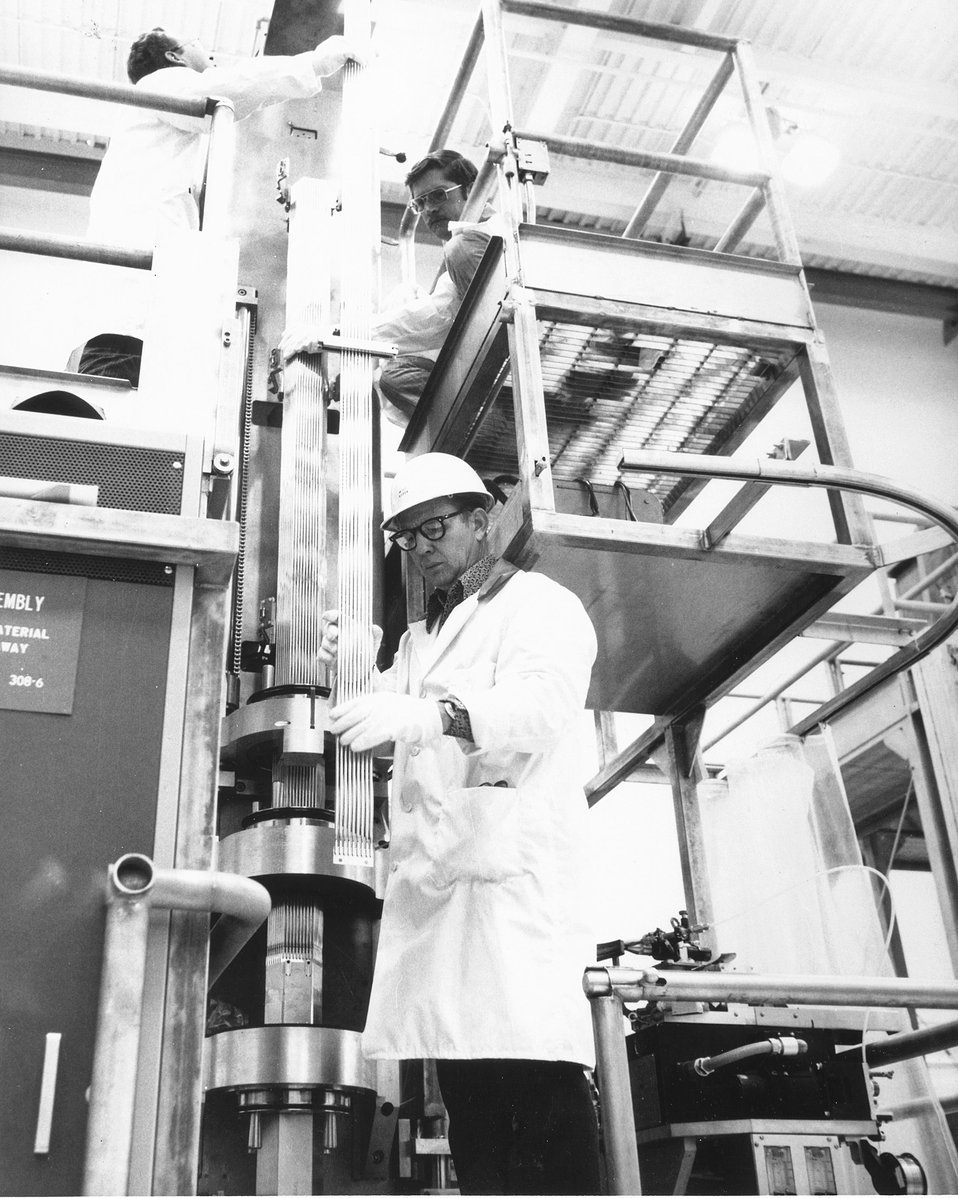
Westinghouse Hanford Company technicians arrange fuel pins for hexagonal fuel assembly at Hanford. Work is underway on assembly of the first two cores for the Fast Flux Test Facility.